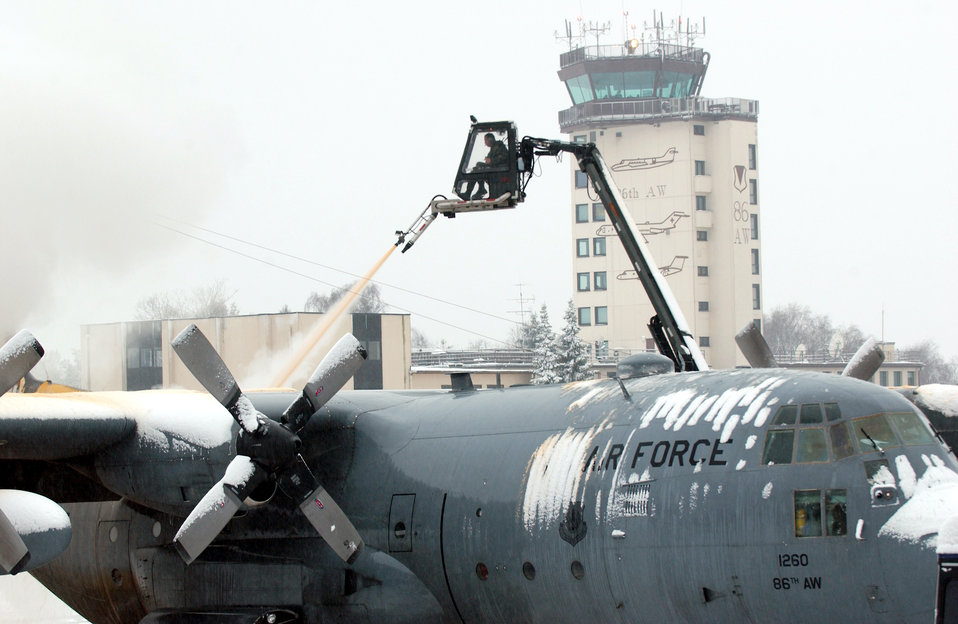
De-ice de-plane

RAMSTEIN AIR BASE, Germany -- An airman from the 86th Aircraft Maintenance Squadron here de-ices a C-130 Hercules on Jan. 27 after a heavy snowfall the day before. The base received 3.5 inches of snow Jan. 26 and Air Force weather forecasters said more snow was on the way.